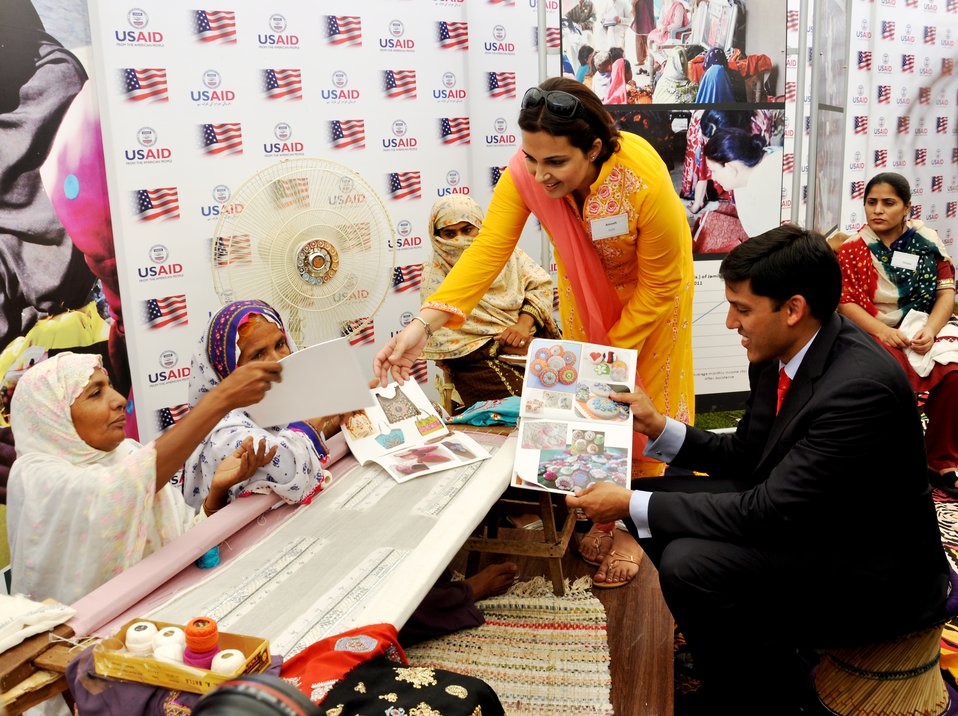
Dr. Rajiv Shah visiting Entrepreneurs project stalls